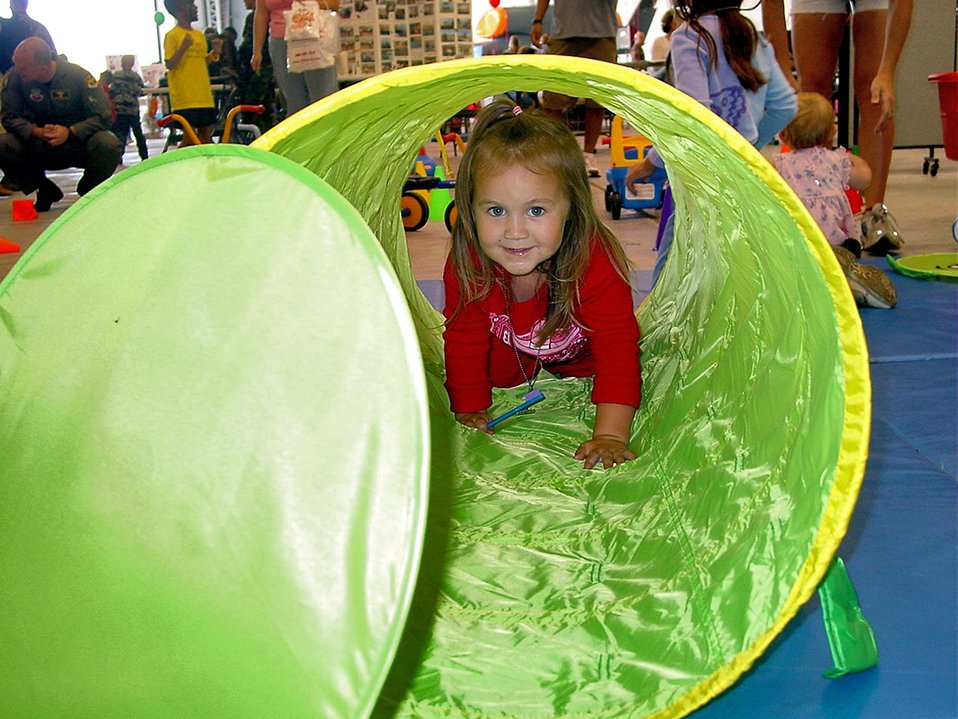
Open House

BEALE AIR FORCE BASE, Calif. -- Molly Griego crawls through a tunnel in the kids play area during Beales Military Family Day.